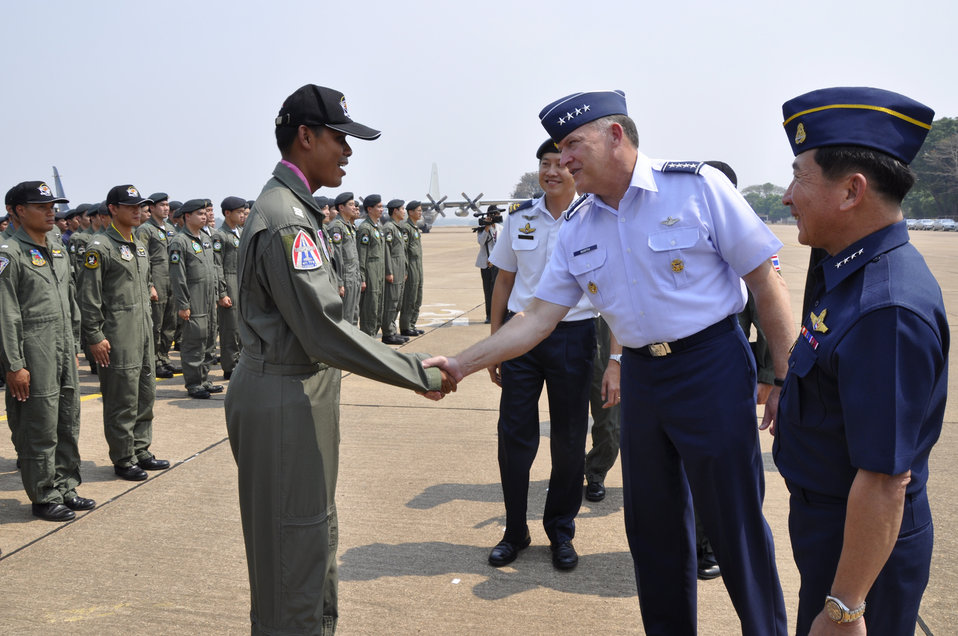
Pacific partners close Cope Tiger with ceremony

Gen. Gary North greets the commander of troops for the Republic of Singapore Air Force during the Cope Tiger 2010 closing ceremony March 12, 2010, at Korat Royal Thai Air Force Base, Thailand.General Norht is the Pacific Air Forces commander.